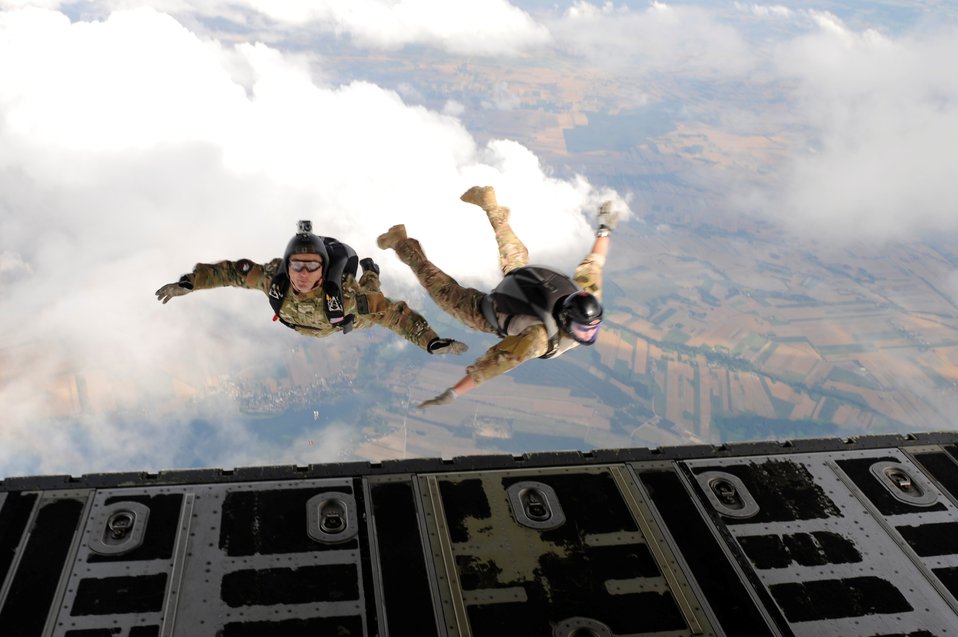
Exercise Screaming Eagle IV

Master Sgt. Ed Dawejko and Staff Sgt. Brandon Fountain jump from a C-130J Super Hercules for high-altitude, low-opening jumps with Polish special forces during Exercise Screaming Eagle IV in Povidz, Poland, July 30, 2012. Screaming Eagle is an annual exercise that allows pilots from the 37th Airlift Squadron to conduct training with the C-130J Super Hercules aircraft while facilitating training for several other units. Dawejko is a 603rd Air Operation Center jumpmaster and Fountain is a 435th Contingency Readiness Group survive, evade, resist, escape specialist.